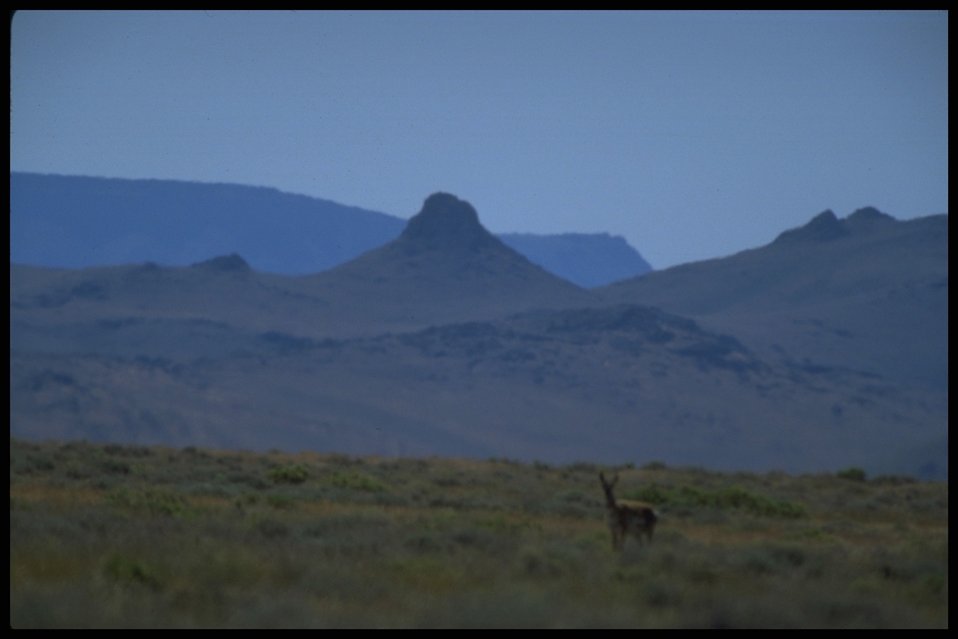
Scenic view of desert, Lakeview District.